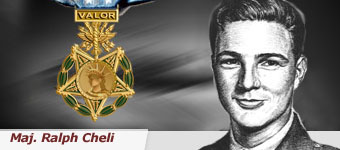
Maj. Ralph Cheli led a squadron of B-25 Mitchells Aug. 18, 1943 over the heavily defended airdrome near Wewak, New Guinea. For his actions, in saving his men, Major Cheli was awarded the Medal of Honor.